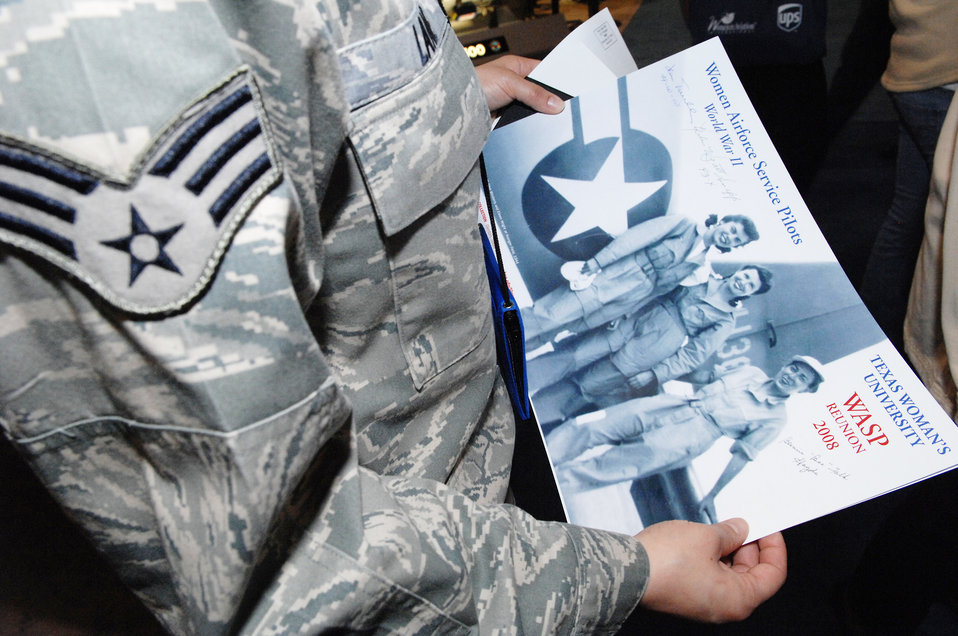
First women fliers

Senior Airman Jennie R. Lane admires a Women Airforce Service Pilots poster with newly obtained autographs from the WASP exhibit booth Feb. 27, 2010, during the Women in Aviation International 2010 conference in Orlando, Fla. Airman Lane is a maintenance technician assigned to the 4th Combat Camera Squadron at March Air Reserve Base, Calif.